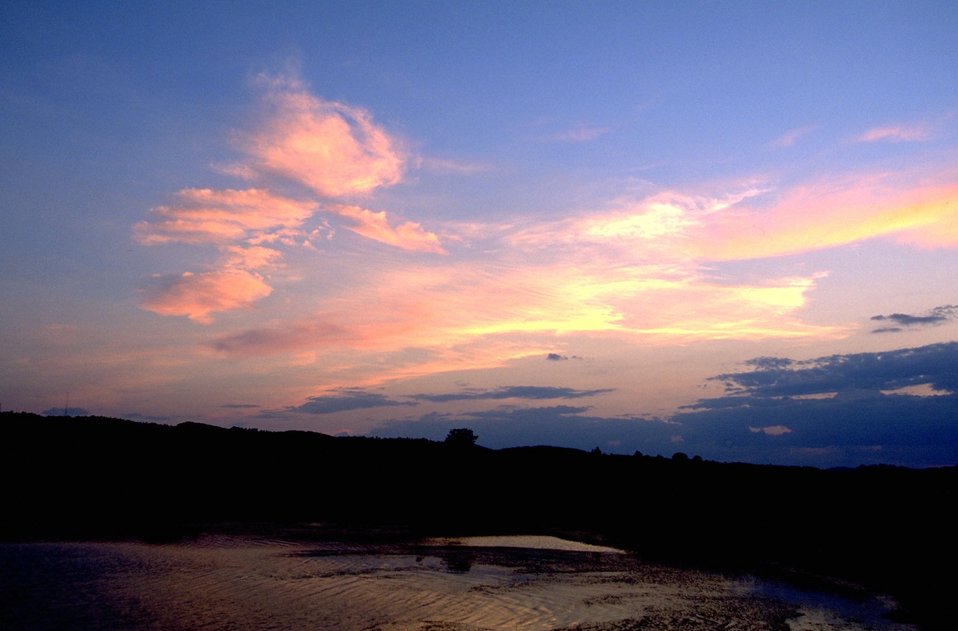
South Dakota sunset on Porcupine Creek grazing allotment